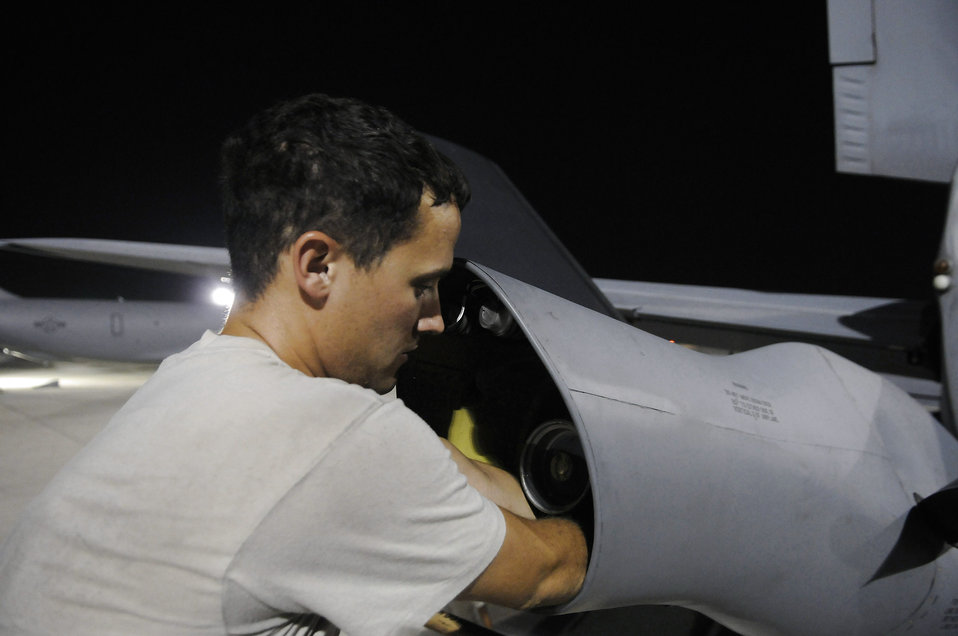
Night light

Staff Sgt. Ryan Letourneau changes out the boom light on a KC-135 Stratotanker Oct. 27 at an air base in Southwest Asia. The KC-135 provides aerial refueling support to Air Force Navy, Marine Corps and allied nation aircraft operating in the Central Command area of responsibility. Sergeant Letourneau is assigned to the 379th Expeditionary Aircraft Maintenance Squadron. He is a native of Prosser, Wash., and is deployed from Fairchild Air Force Base, Wash.